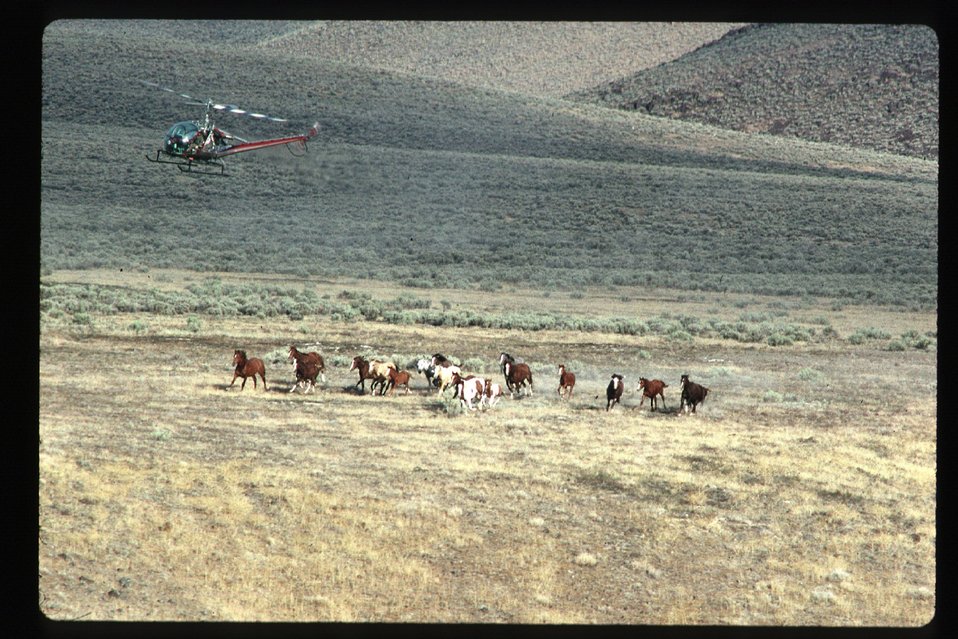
Wild horse round up by helicopter Wild Horse and Burro Adoption Program LSRD Lower Snake River District